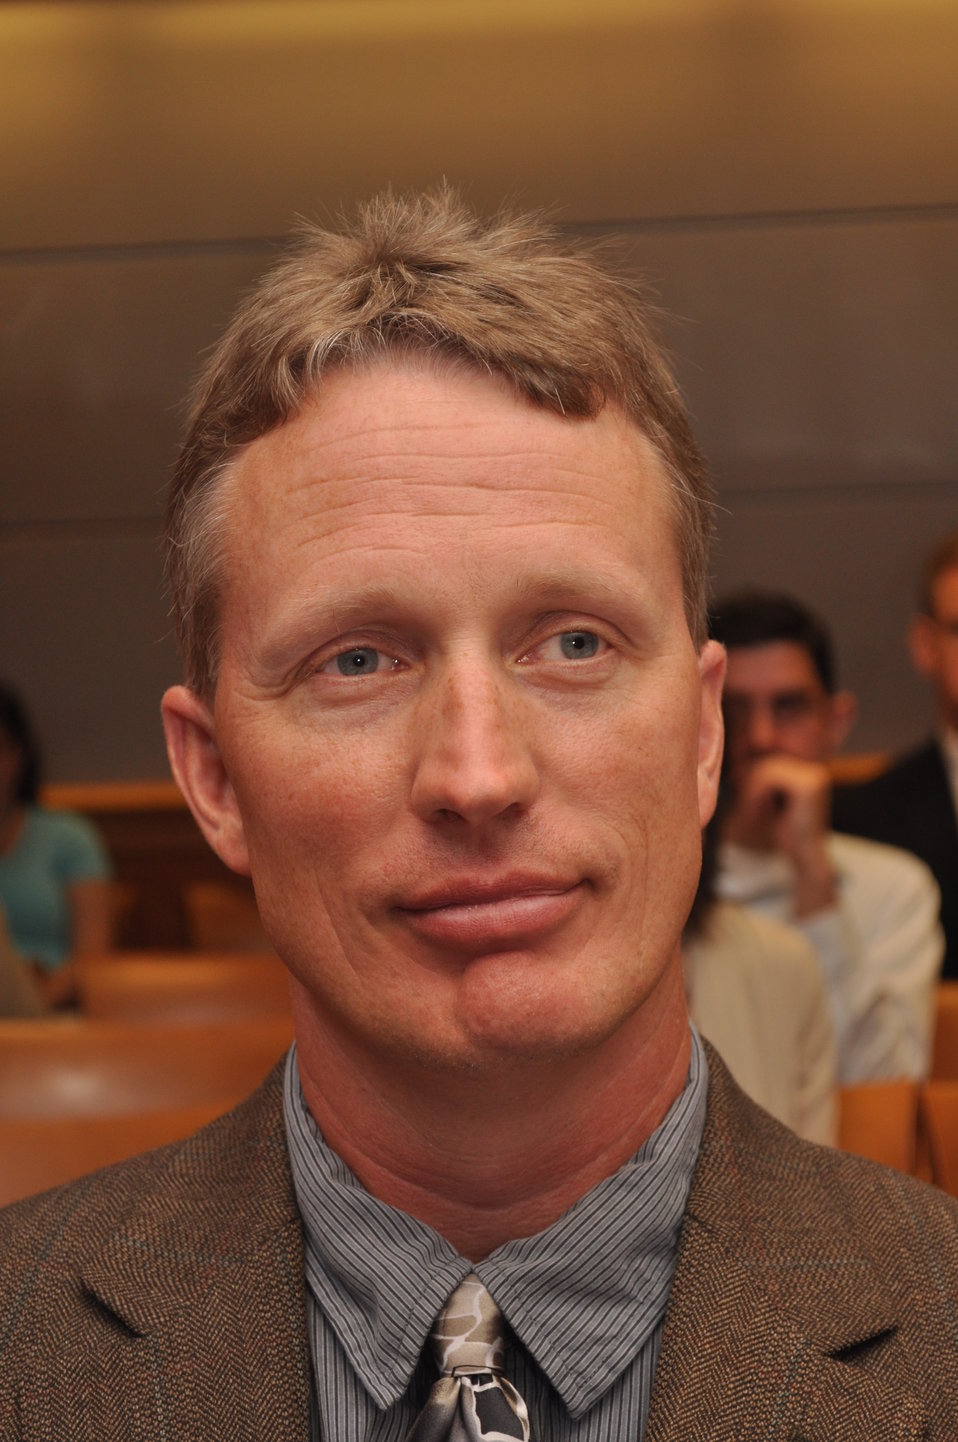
Engineers and Economists

At the August, 2011 Open Meeting the FCC recognized engineers and economists.